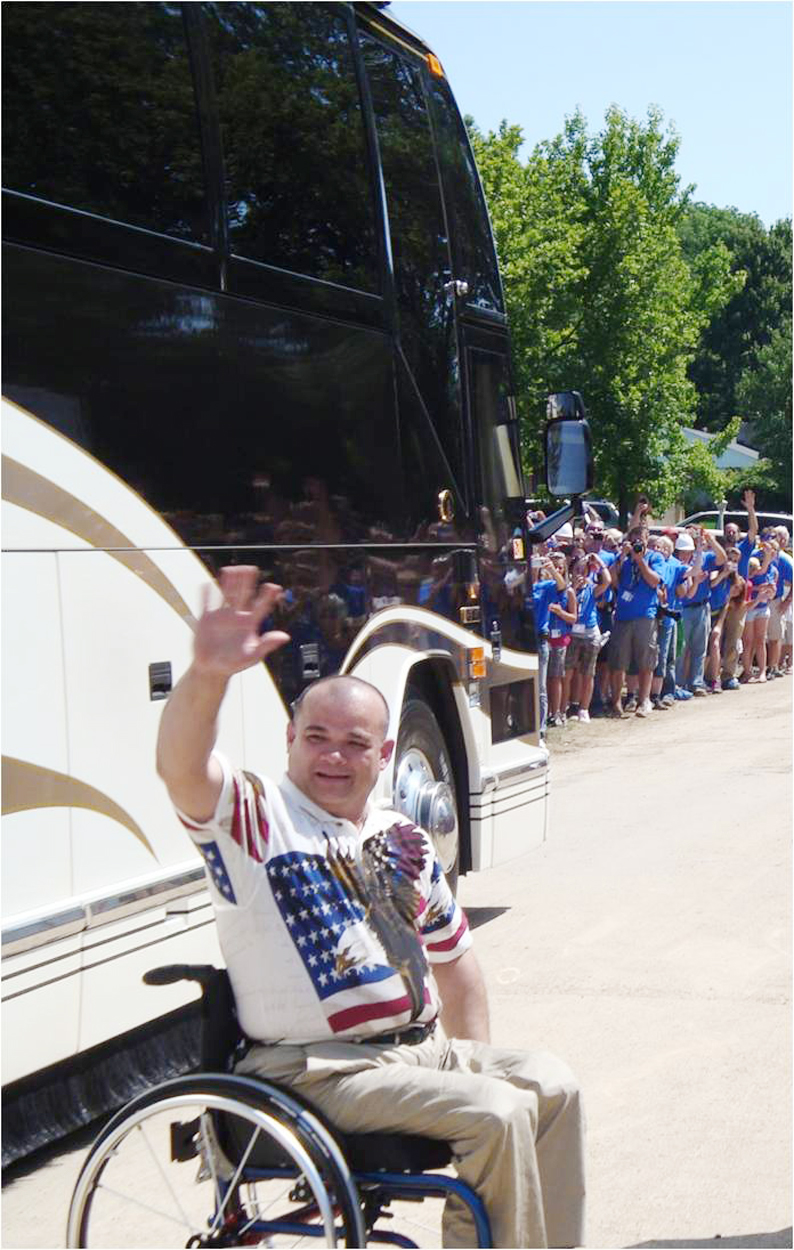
Air Force family's 'Extreme Makeover' to air on Nov. 8

James Terpenning, an Aeronautical Systems Center information technology specialist, waves to thousands of volunteers and onlookers after seeing his new home unveiled as part of the television show 'Extreme Makeover: Home Edition' on Aug. 6, 2009. The episode featuring the Terpenning family will air Nov. 8 on ABC at 8 p.m./7 p.m. Central time.